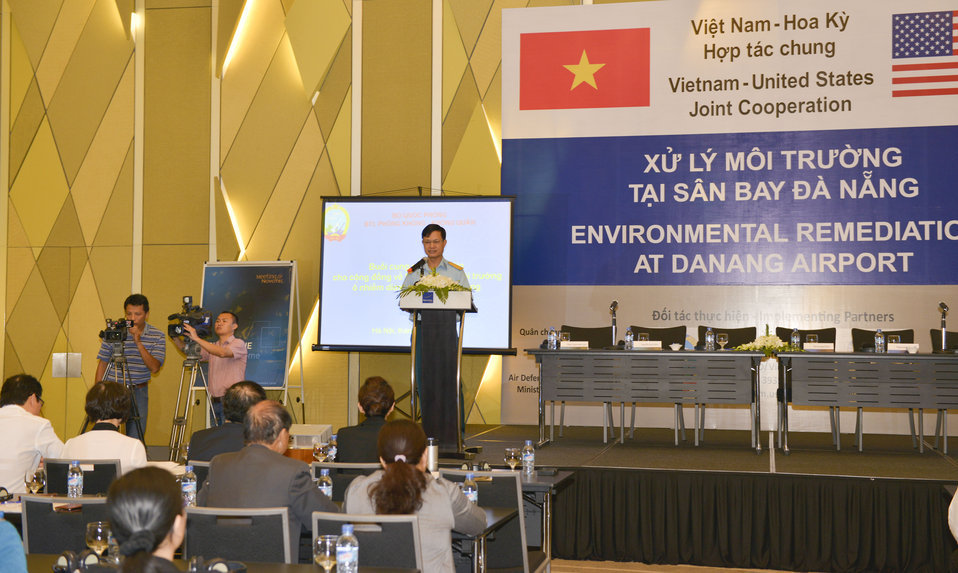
Colonel Do Duy Kien, Head of Military Science Office, Air Force-Air Defense Command, speaks at the Community Outreach Session on Environmental Remediation of Dioxin Contamination at Danang Airport Project

Danang, March 25, 2014.